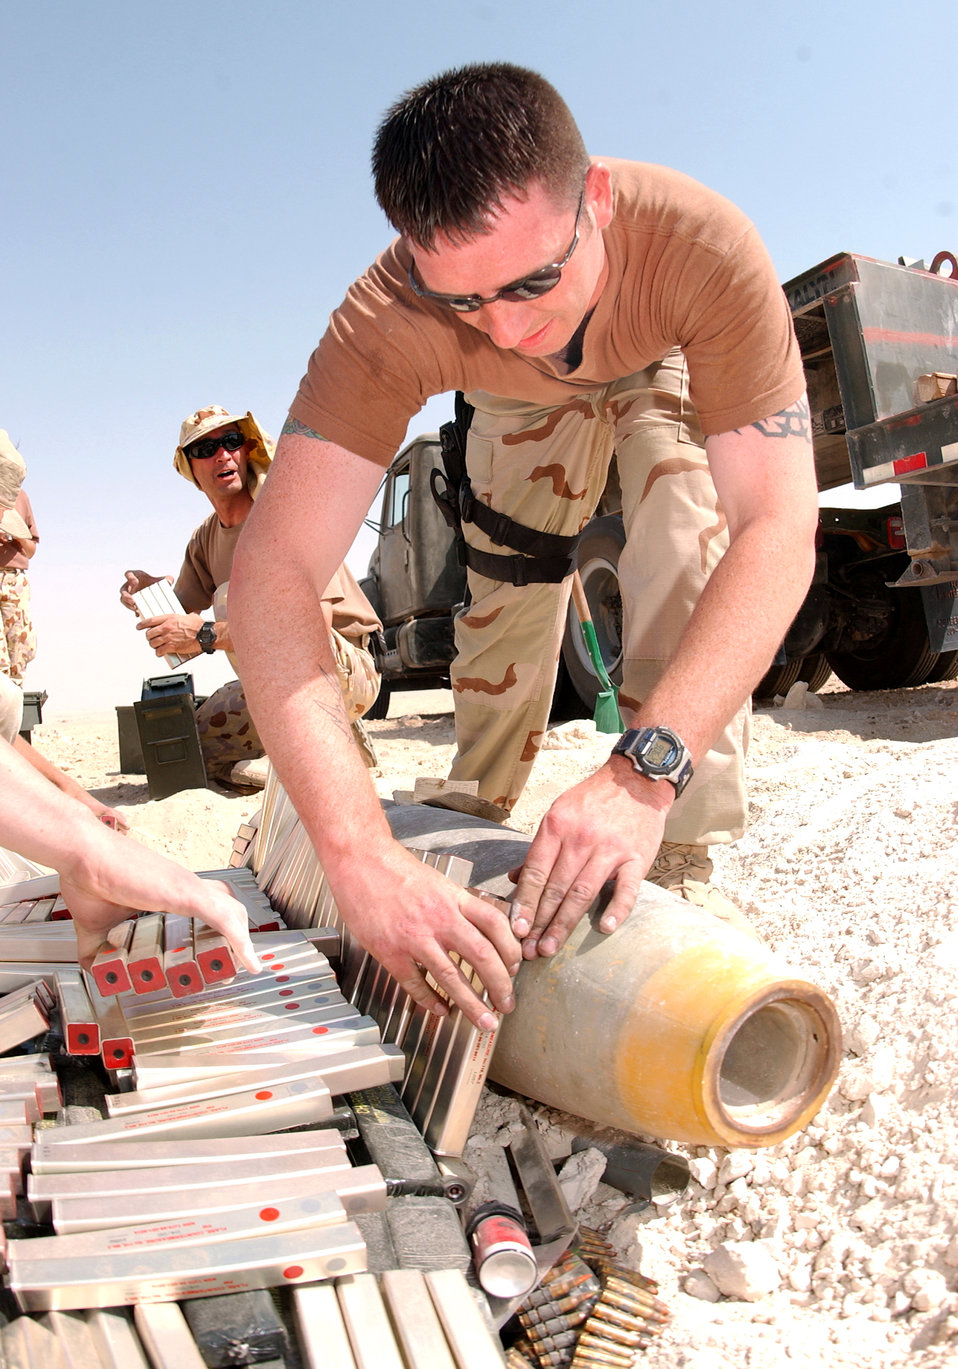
Airmen partner with Soldiers to explode excess ordnance

SOUTHWEST ASIA -- Staff Sgt. Douglas Frey arranges the last of the ordnance set for disposal. The ordnance has to be arranged ensuring explosive-to-explosive contact. Any empty pockets could result in ordnance scattered across the range. Sergeant Frey is an explosive ordnance disposal technician with the 379th Expeditionary Civil Engineer Squadron at a forward-deployed location.